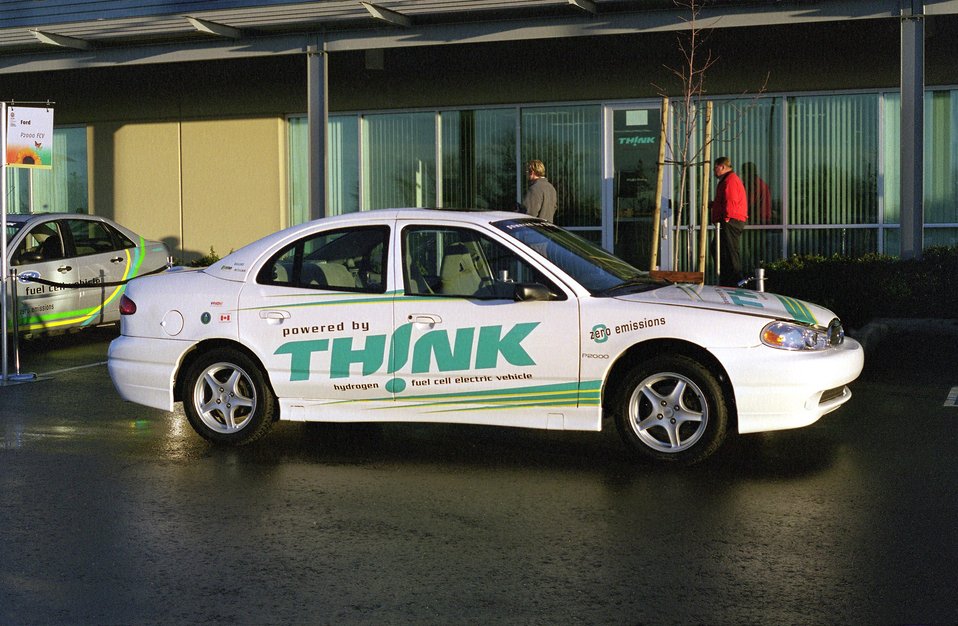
FORD P2000 FUEL CELL ELECTRIC VEHICLE.

FUEL CELLS COMBINE HYDROGEN FUEL WITH OXYGEN FROM THE AIR TO CREATE ELECTRICITY, WHICH POWERS VEHICLES BY MEANS OF ELECTRIC MOTORS. BECAUSE THERE IS NO COMBUSTION IN THE PROCESS, THERE ARE NO OTHER EMISSIONS, MAKING FUEL CELLS AN EXTREMELY CLEAN AND RENEWABLE SOURCE OF ELECTRICITY.